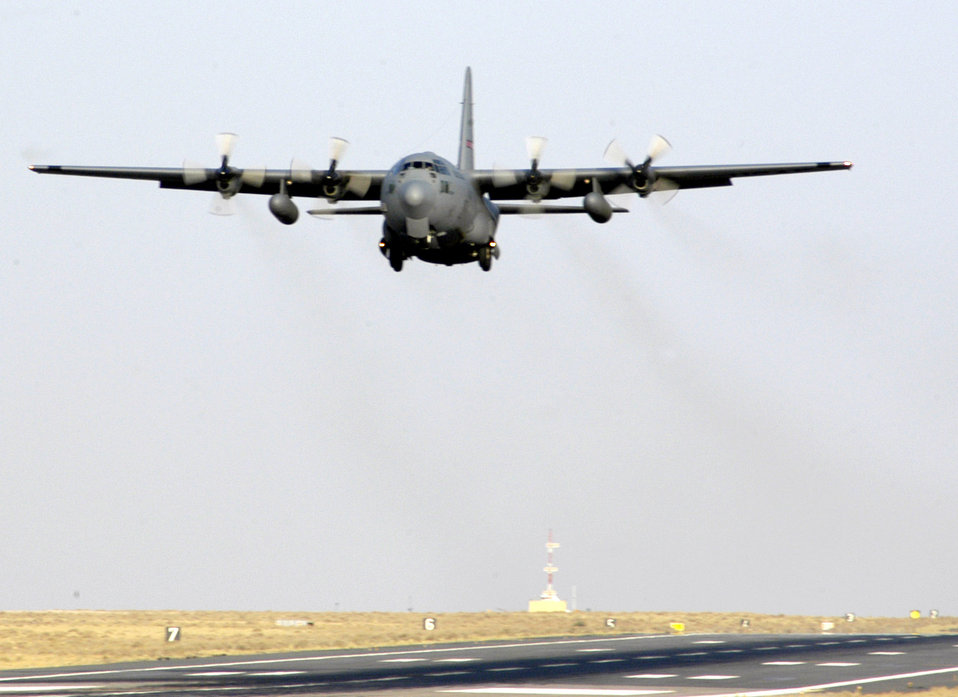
Airlift support

A C-130 Hercules from the 386th Air Expeditionary Wing in Southwest Asia takes off on a mission to Iraq. The 386th AEW is the primary aerial hub for Operation Iraqi Freedom and provides airlift support for Operation Enduring Freedom and the Horn of Africa. The wing is comprised of more than 3,400 active-duty, Guard and Reserve Airmen.